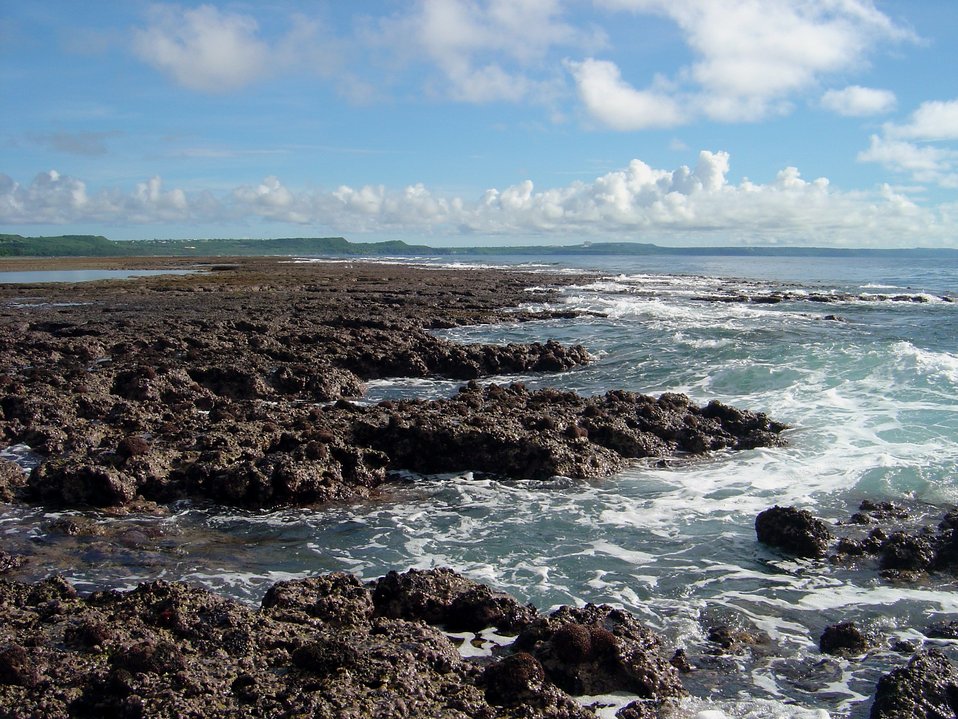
Uncovered reef flat with intervening channels at low tide on the Guam coastline.